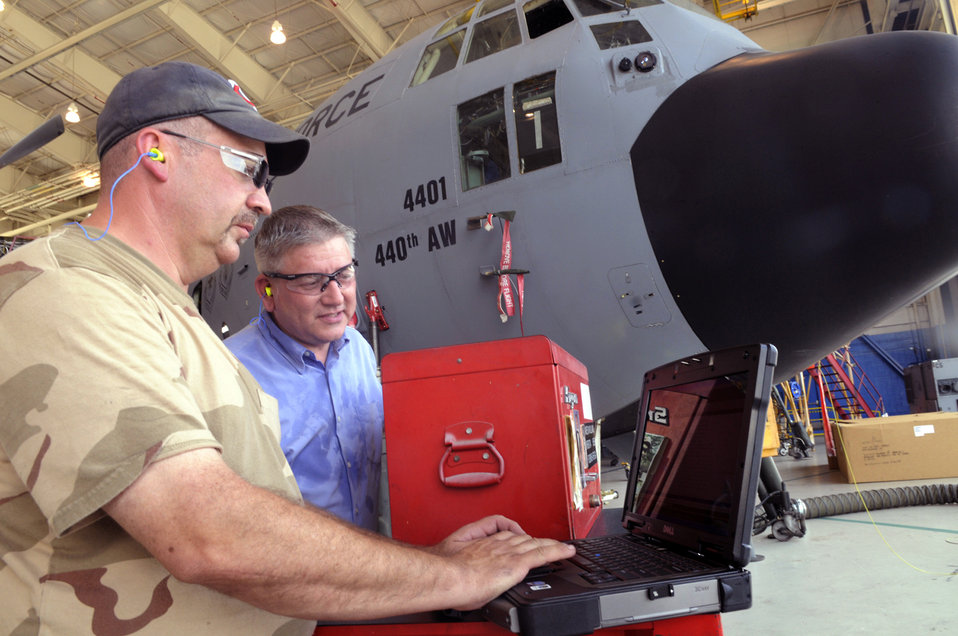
E-tools give Robins personnel access to digital data

Jim Meyer and Tim Reynolds use e-tools as they work on a C-130 Hercules at Robins Air Force Base, Ga. Mr. Meyer is an aircraft mechanic and Mr. Reynolds is the technical project lead for e-tools deployment.